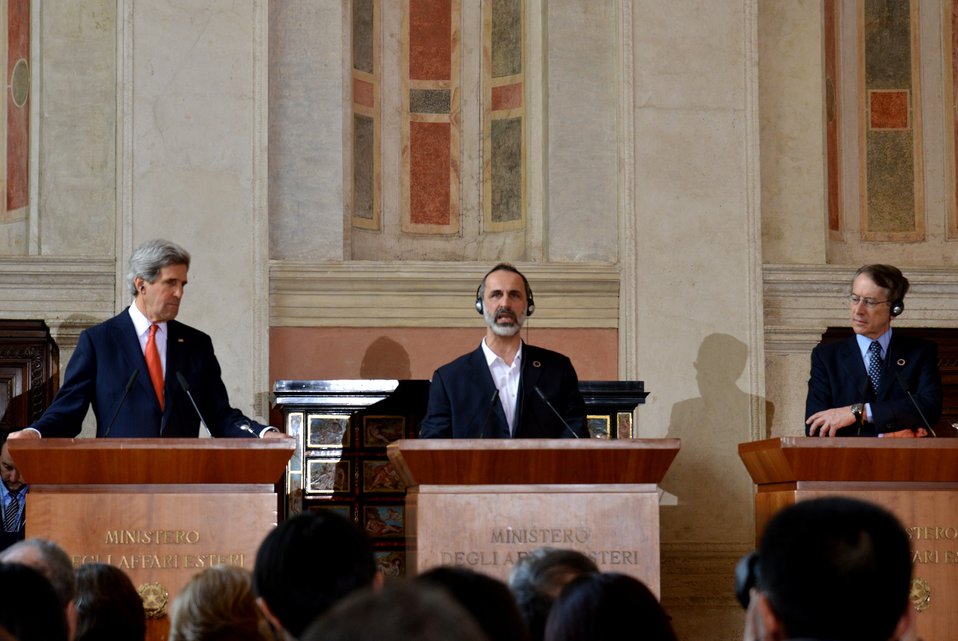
Secretary Kerry, Syrian Opposition Council Chairman al-Khatib, and Italian Foreign Minister Terzi Address Reporters

U.S. Secretary of State John Kerry Kerry delivers a joint press statement with Syrian Opposition Council Chairman Mouaz al-Khatib and Italian Foreign Minister Giulio Terzi in Rome, Italy, on February 28, 2013.